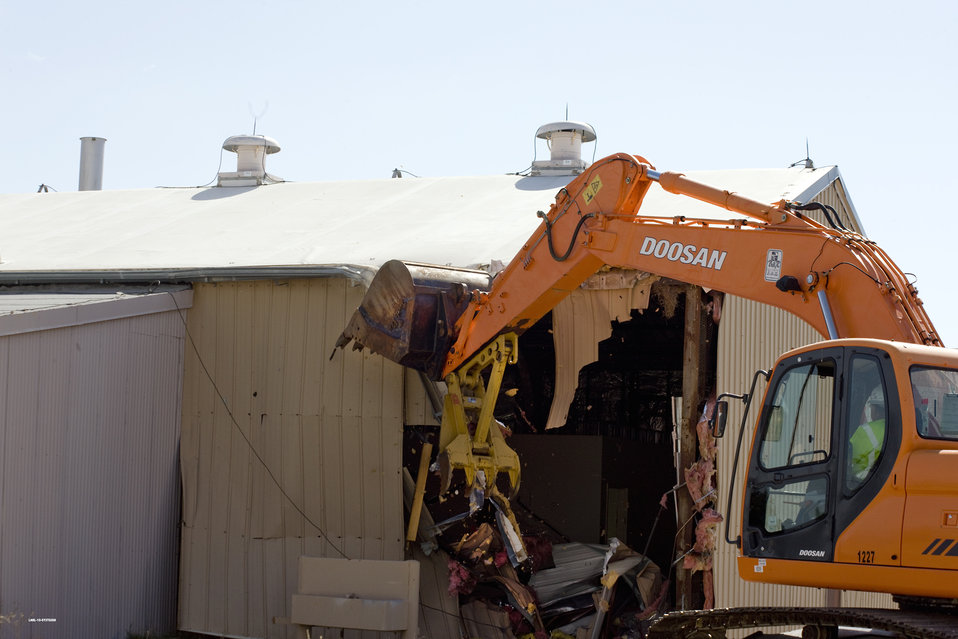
Tritium Systems Test Assembly facility demolition

The Tritium Systems Test Assembly (TSTA) facility (16,000 square feet) is one of 21 buildings that will be demolished at Los Alamos National Laboratory with Recovery Act funding.